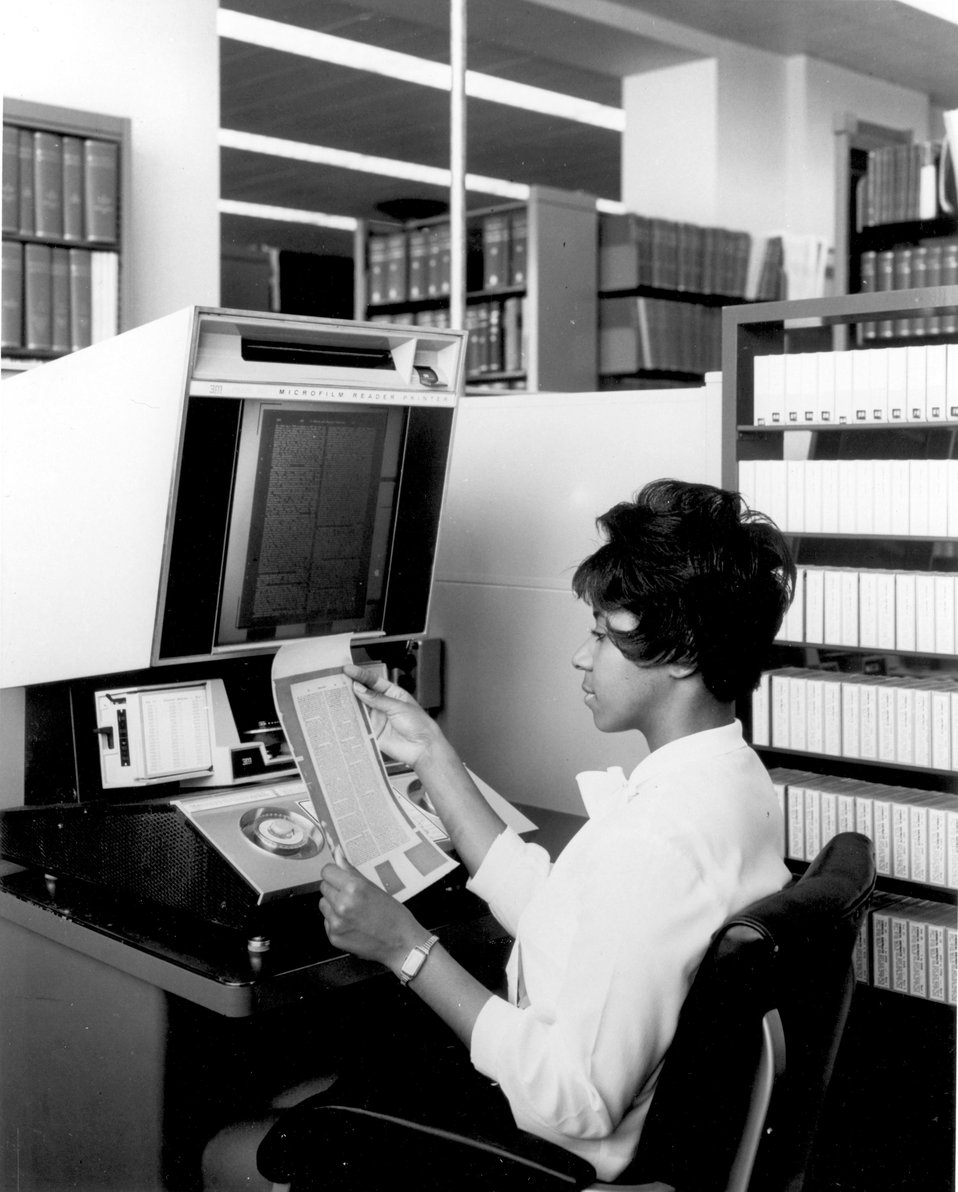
The Atomic Energy Commission's Oak Ridge National Laboratory Central Research Library has acquired 'Nuclear Science Abstracts' and 'Chemical Abstracts' in microfilm cartridge form. c. 1972